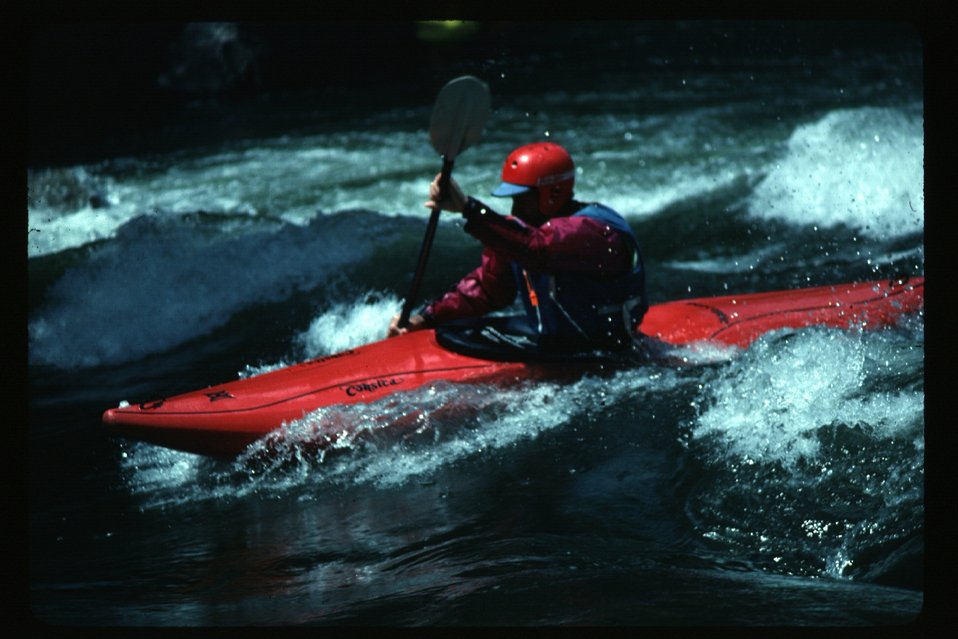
Main Payette Kayaker in white water Kayaking Four Rivers Field Office LSRD Lower Snake River District